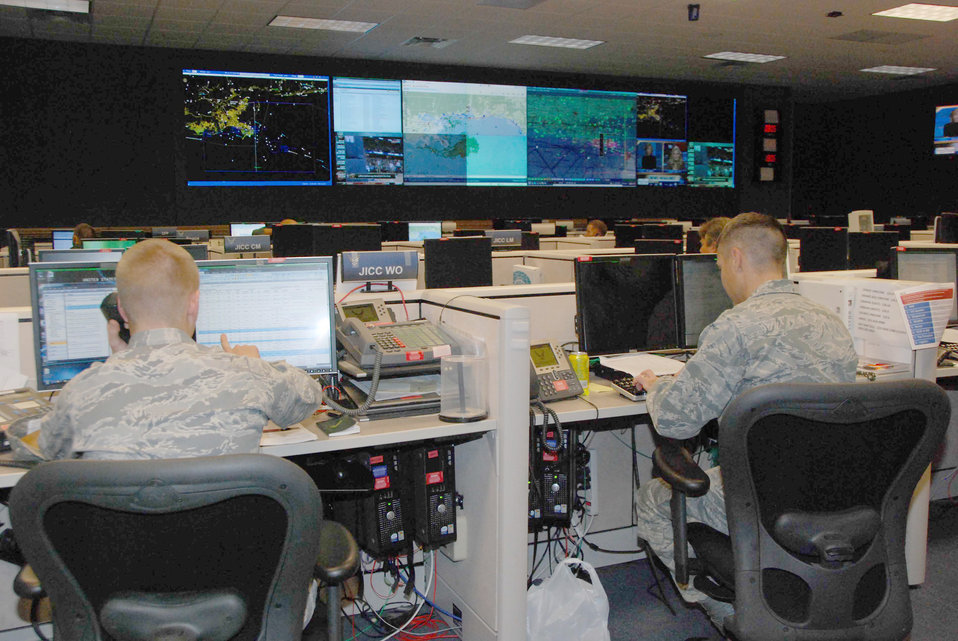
Deepwater Horizon

Aviation Coordination Command airspace managers coordinate airspace activity on the ACC Operations floor July 9, 2010, at the 601st Air & Space Operations Center at Tyndall AFB, Fla. The ACC was created to provide support to the Coast Guard during Deepwater Horizon Response air operations.